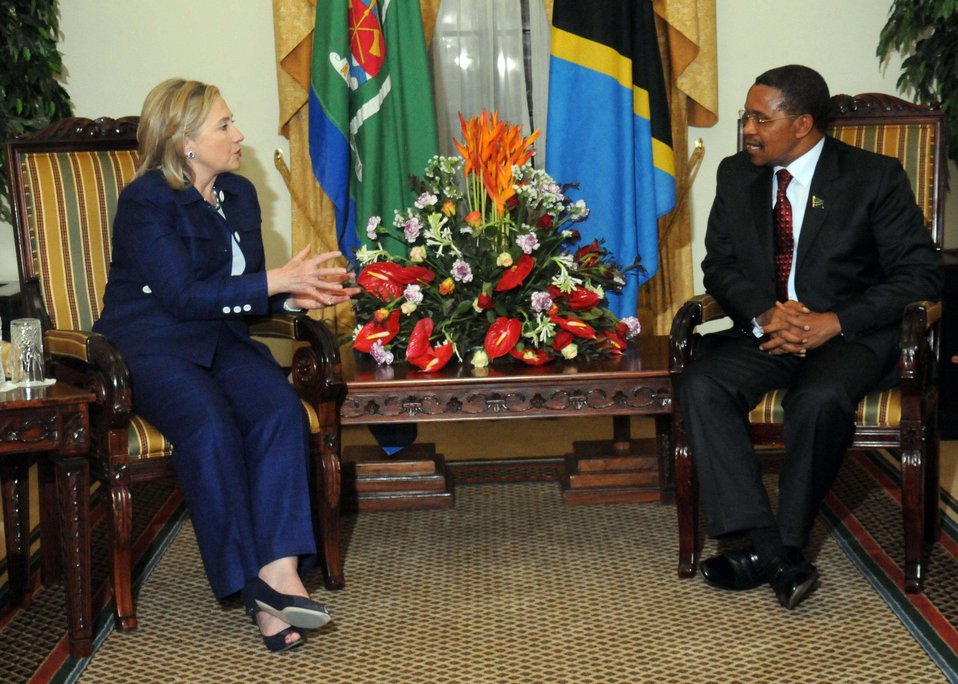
Secretary Clinton Meets With Tanzanian President Kikwete

U.S. Secretary of State Hillary Rodham Clinton, left, holds a bilateral meeting with Tanzanian President Jakaya Kikwete, right, at the State House in Dar es Salaam, Tanzania, on June 13, 2011.